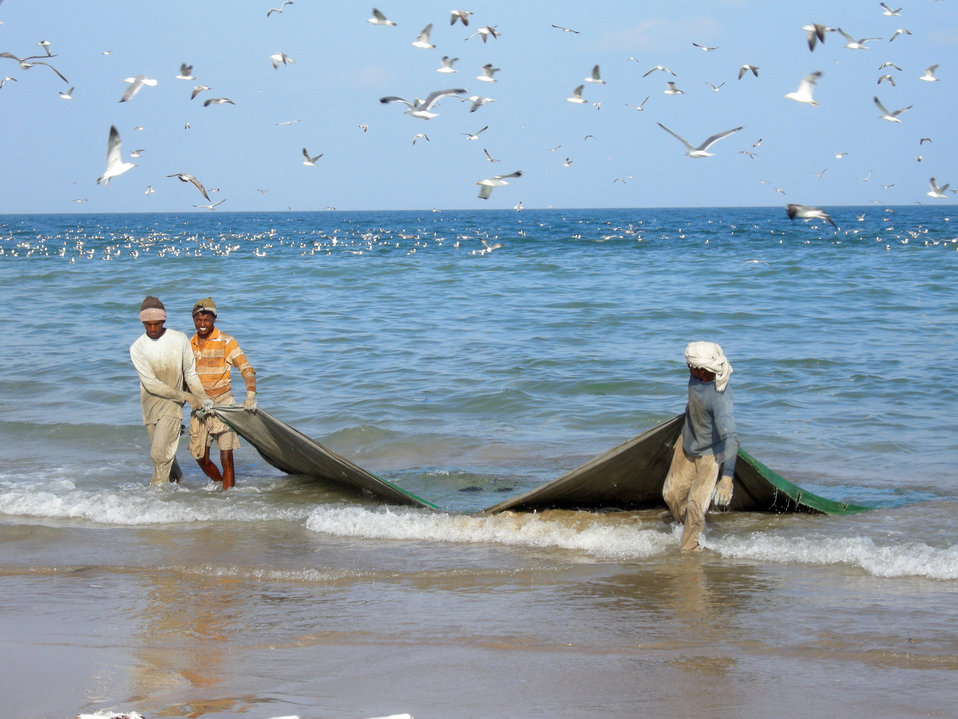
Oman fishermen

Fishermen persian gulf oman.